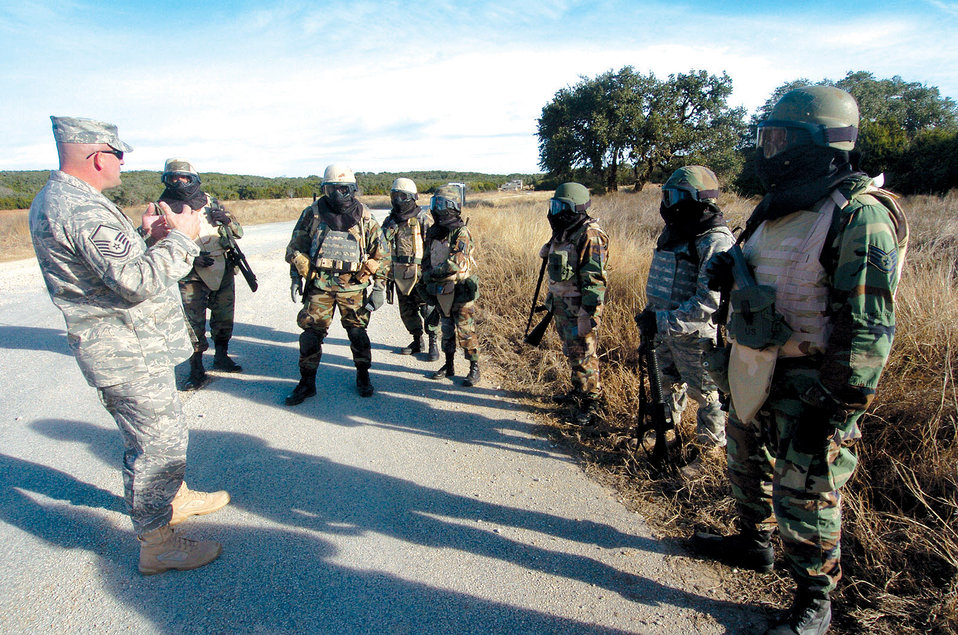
Battlefield training makes warriors out of Airmen

Master Sgt. Norman Watson gives a safety briefing to a squad of students who are about to enter the training village Dec. 20 at Camp Bullis, Texas. The field training exercise is the final phase of the Common Battlefield Airman Training Bridge course. The students will maneuver into the village in a combat scenario focusing on reacting to enemy contact. Sergeant Watson is the CBAT-B course superintendant.